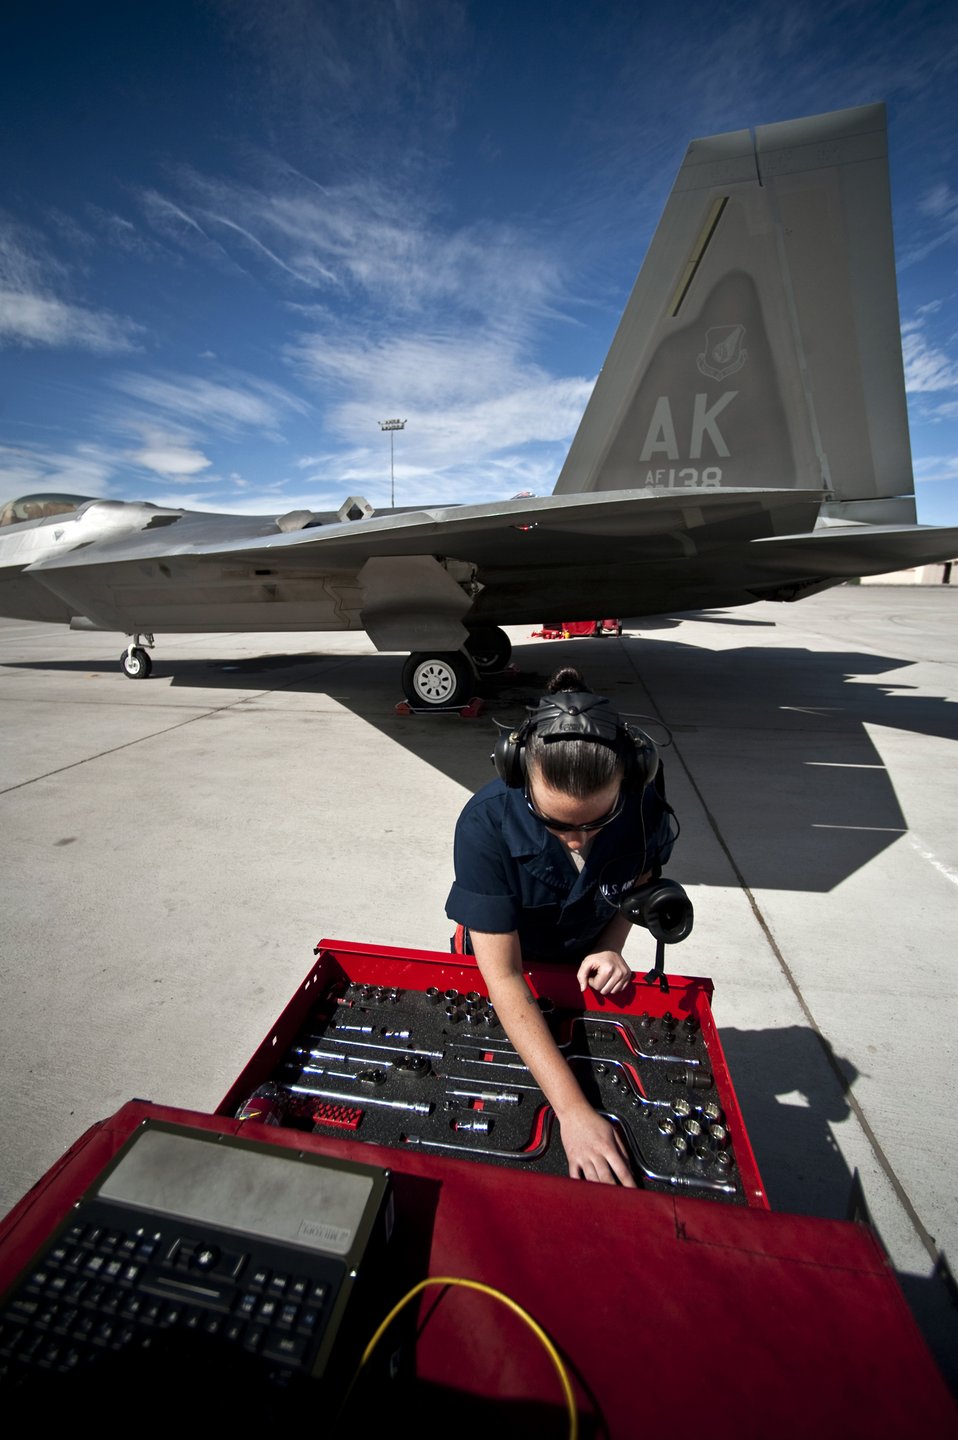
Everything's in place

Senior Airman Samantha Whisman looks over her tools before preparing an F-22 Raptor for a training mission March 2, 2011, during Red Flag at Nellis Air Force Base, Nev. Airman Whisman is a crew chief assigned to the 90th Aircraft Maintenance Squadron at Elmendorf AFB, Alaska.